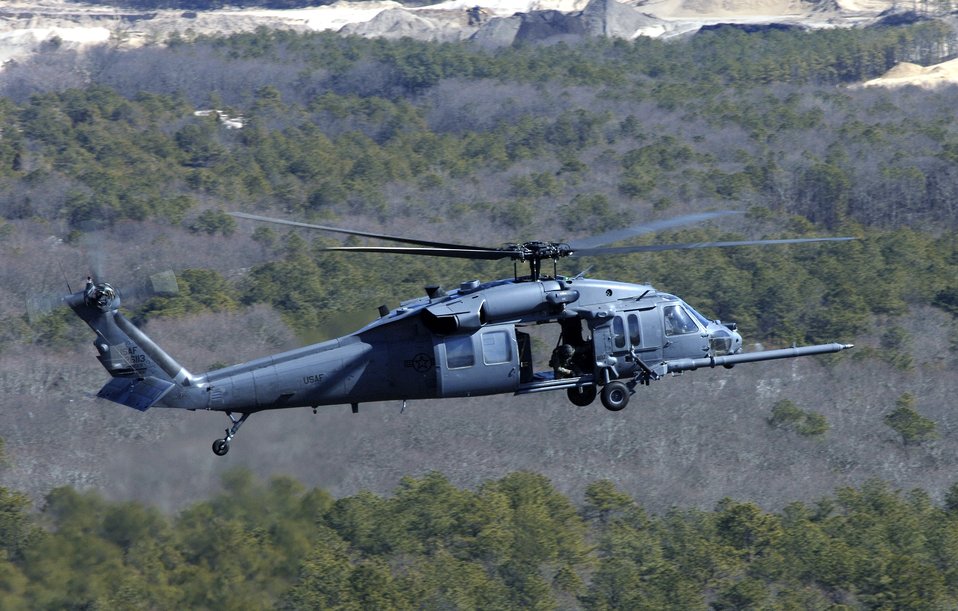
CENTAF airpower summary for March 5

HH-60 Pave Hawk helicopters, like the one shown, conduct day or night operations to support medical evacuations in Southwest Asia. The versatile aircraft also can be used for search and rescue and many military operations other than war.